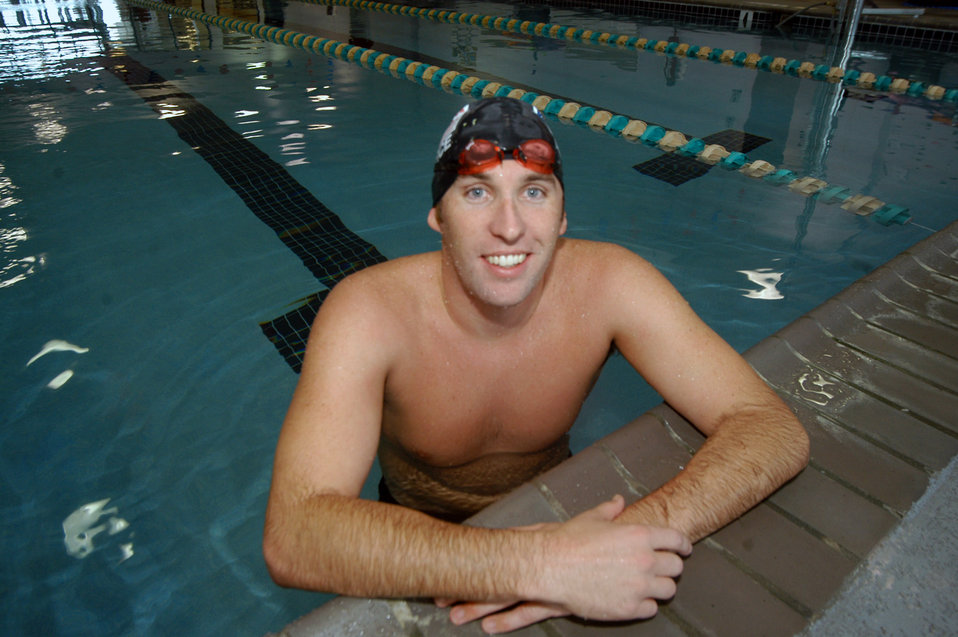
Robins officer makes a splash with Air Force swim team

Ryan Fitzgerald, former team captain for the Air Force Academy swim team was recently selected for the Air Force swim team.